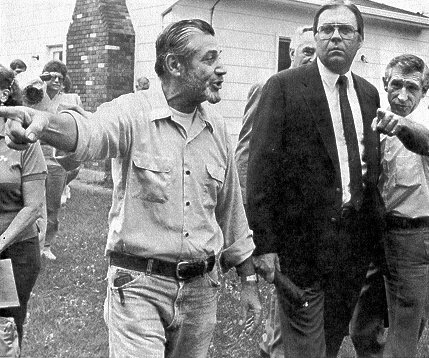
Love Canal residents discuss revitalizing their contaminated neighborhood with Administrator Lee Thomas in September, 1985.

Learn more about the Love Canal disaster